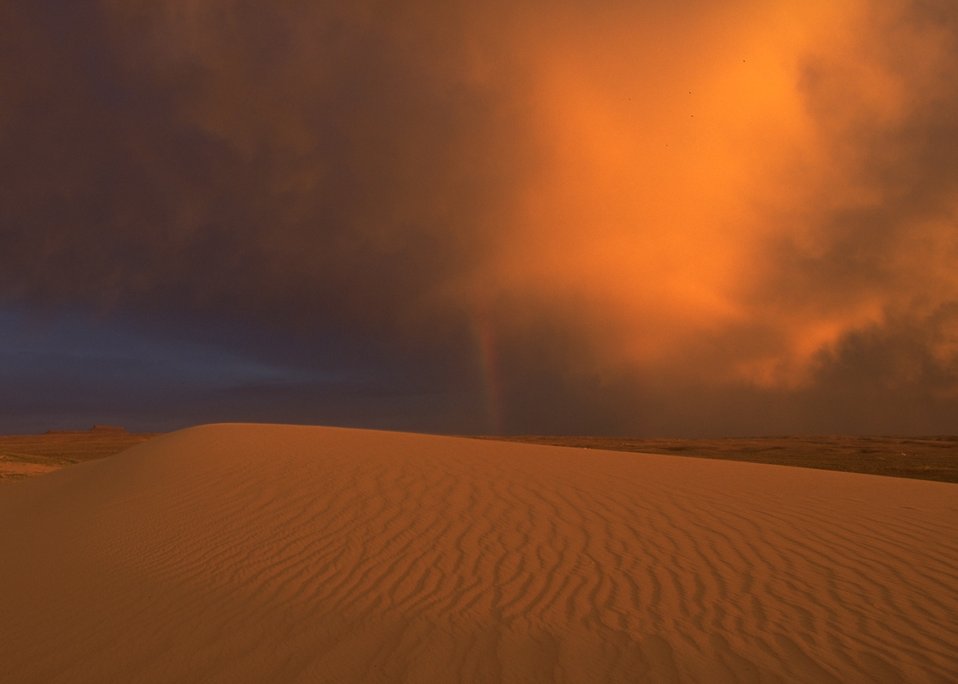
Passing storm at sunset over OHV Sand Dunes Area, Rock Springs Field Office.